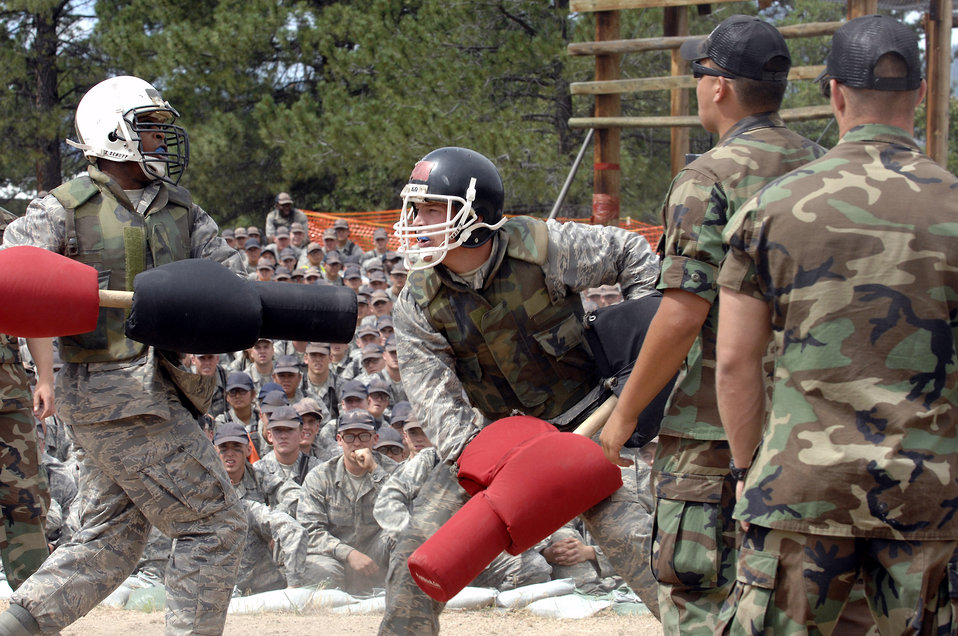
Big Bad Basic

U.S. Air Force Academy basic cadet James Franklin, in white helmet, competes against basic cadet Jonathan Newman during the Big Bad Basic finals July 26. Cadet Newman overpowered Cadet Franklin, earning the title